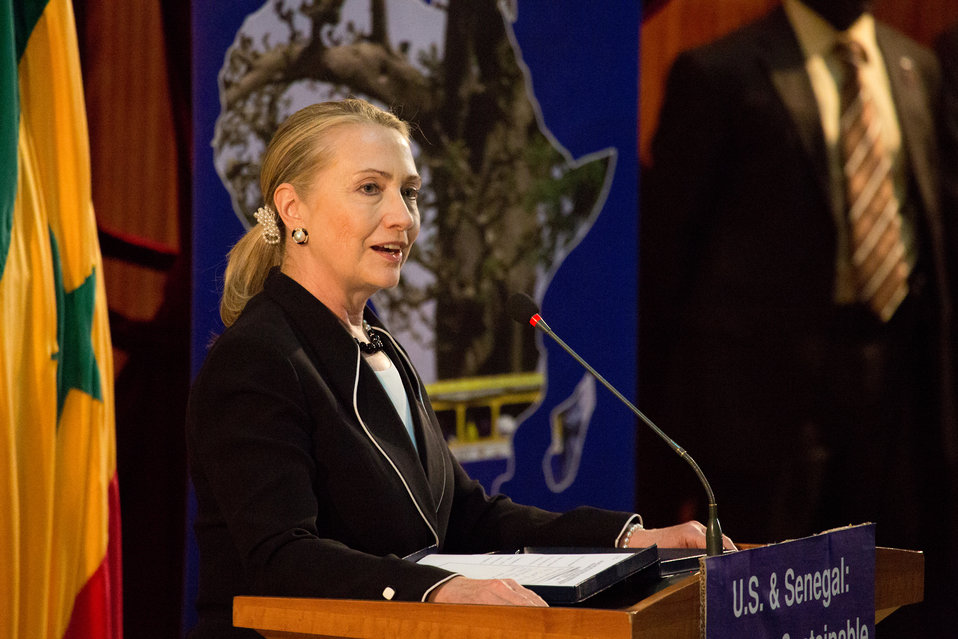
Secretary Clinton Delivers Remarks on U.S. and Senegal: Building Sustainable Partnerships

U.S. Secretary of State Hillary Rodham Clinton delivers remarks on delivers remarks on the U.S. and Senegal: Building Sustainable Partnerships in Dakar, Senegal, on August 1, 2012.